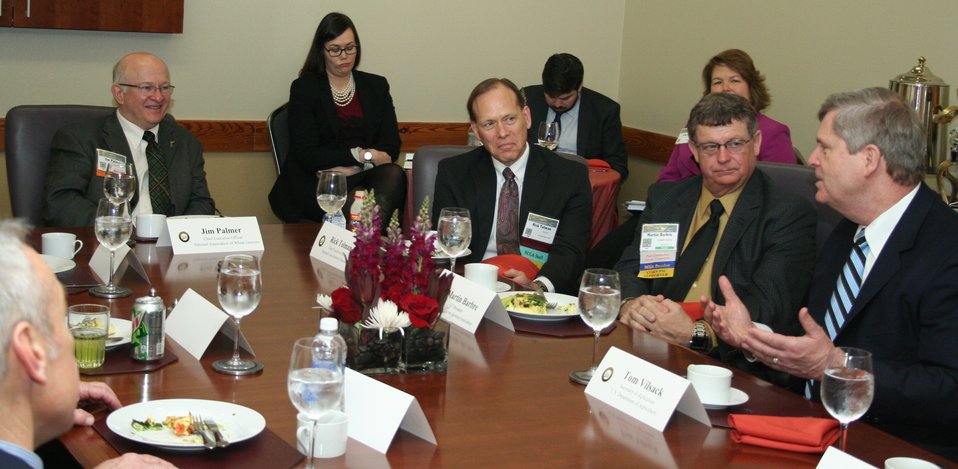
Agriculture Secretary Tom Vilsack and Agriculture Deputy Secretary Krysta Harden visit with presidents and CEOs of major commodity associations about the Farm Bill, trade, regulations and other topics prior to Secretary Vilsack’s keynote address at the Commodity Classic in San Antonio, TX on Friday, Feb. 28, 2014.USDA photo by Melissa Blair.